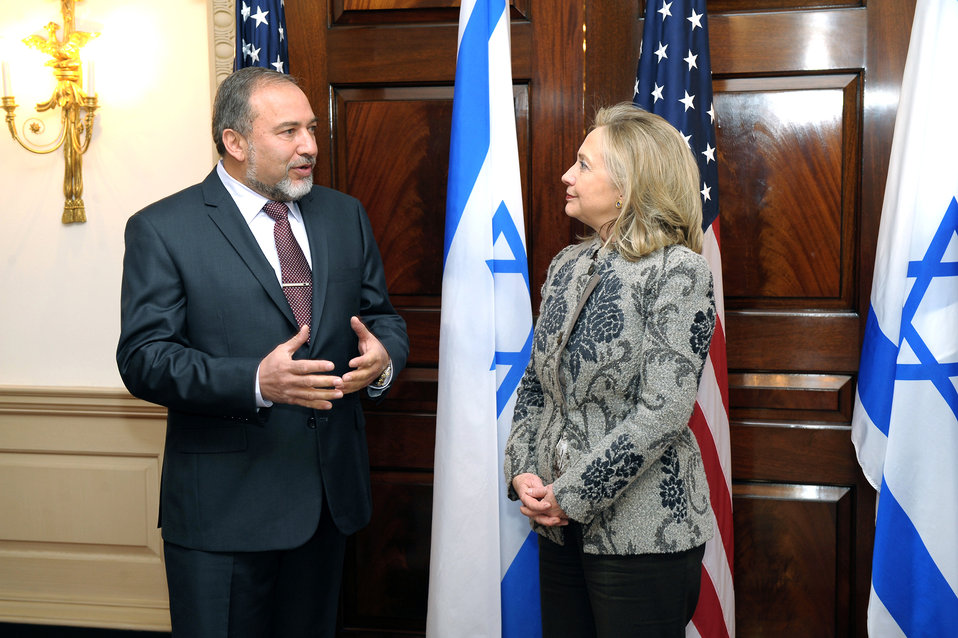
Secretary Clinton Meets With Israeli Deputy Prime Minister and Foreign Minister Liberman

U.S. Secretary of State Hillary Rodham Clinton meets with Israeli Deputy Prime Minister and Foreign Minister Avigdor Liberman at the U.S. Department of State in Washington, D.C., on February 7, 2012.